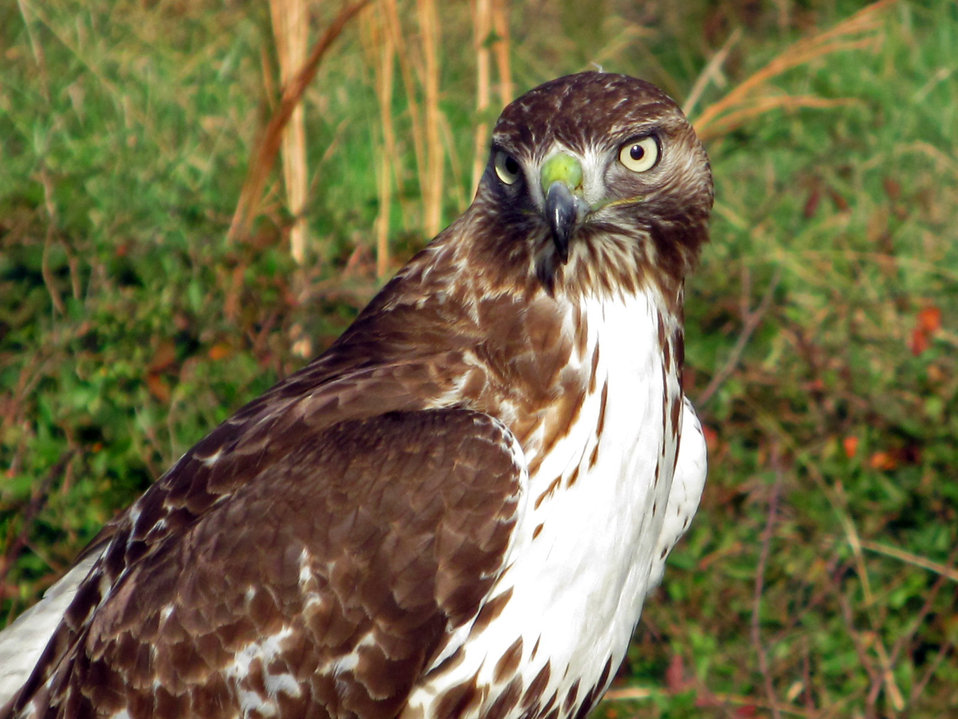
Red-tailed hawk

Fisherman Island National Wildlife Refuge, VA.